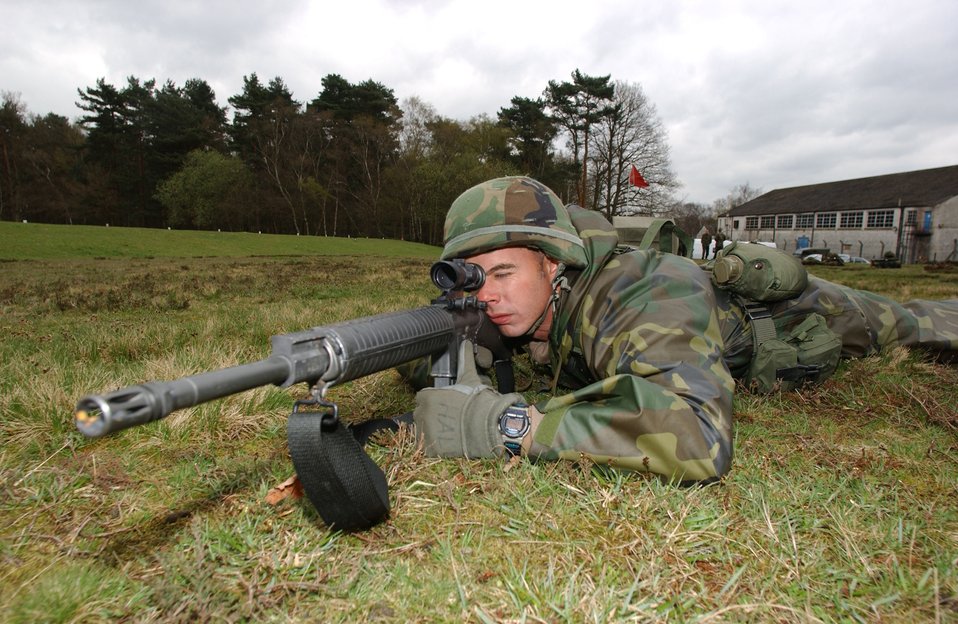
Locked and loaded

ROYAL AIR FORCE BISLEY, England -- Staff Sgt. Eric Hall practices shooting an M-16 rifle during practice for the Atlantic Challenge Shooting Competition here recently. The annual competition is among the best shooters in the U.S. Air Force Security Forces career field and the Royal Air Force Regiment. Sergeant Hall is a security forces Airman from Lackland Air Force Base, Texas.